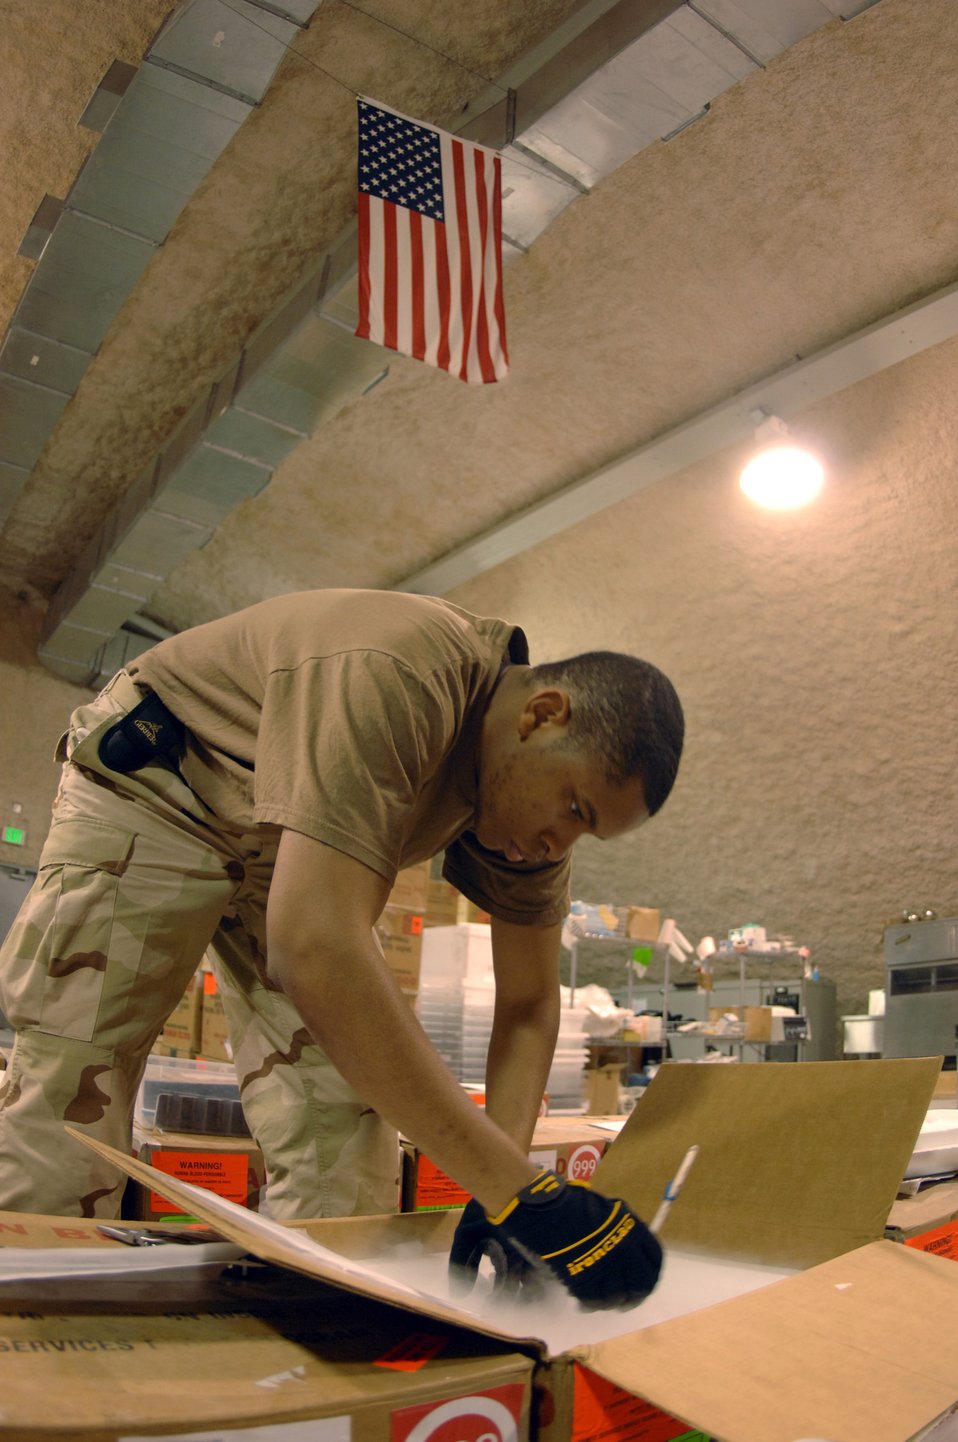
Blood samples

SOUTHWEST ASIA -- Senior Airman Mark Bell checks the temperature of blood samples at the blood trans-shipment center here Jan. 28. The center gets blood from the United States and sends it throughout the region. Airman Bell is deployed from Langley Air Force Base, Va.